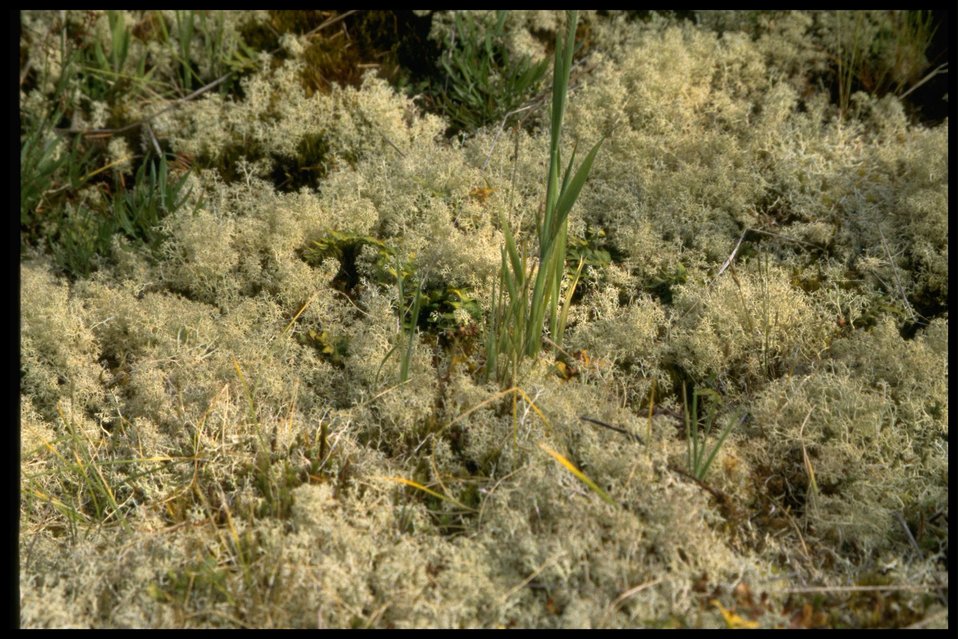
Close up of Lichen at Point Colville.